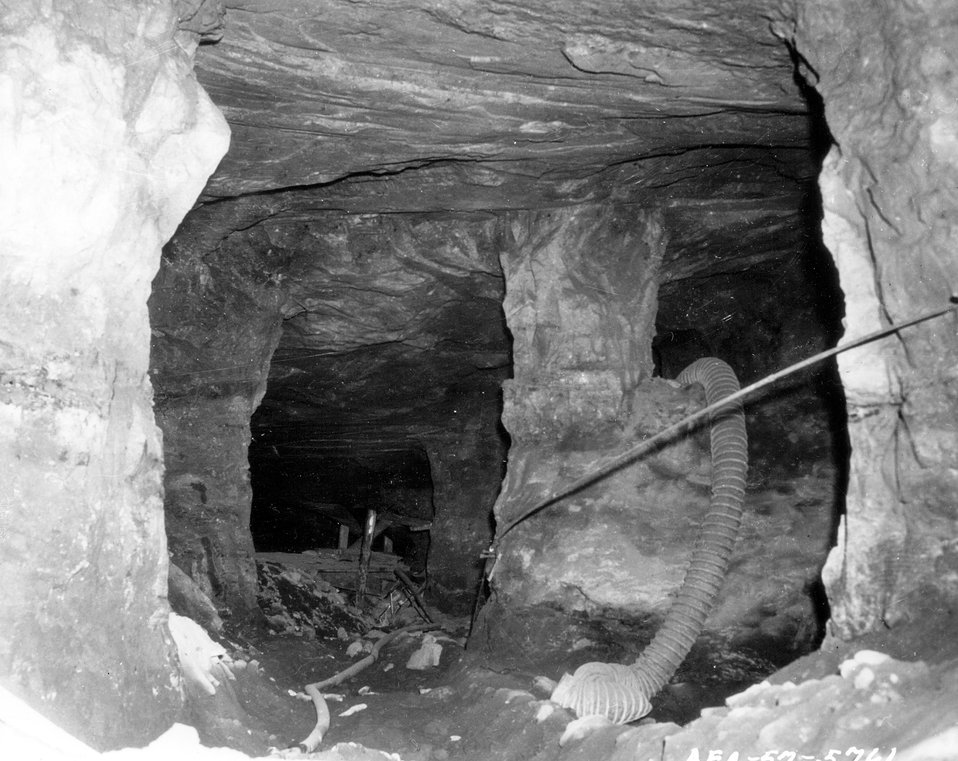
Pillar-supported slopes in an underground uranium mine. Pillars and ore will be extracted in retreat mining. c. 1957